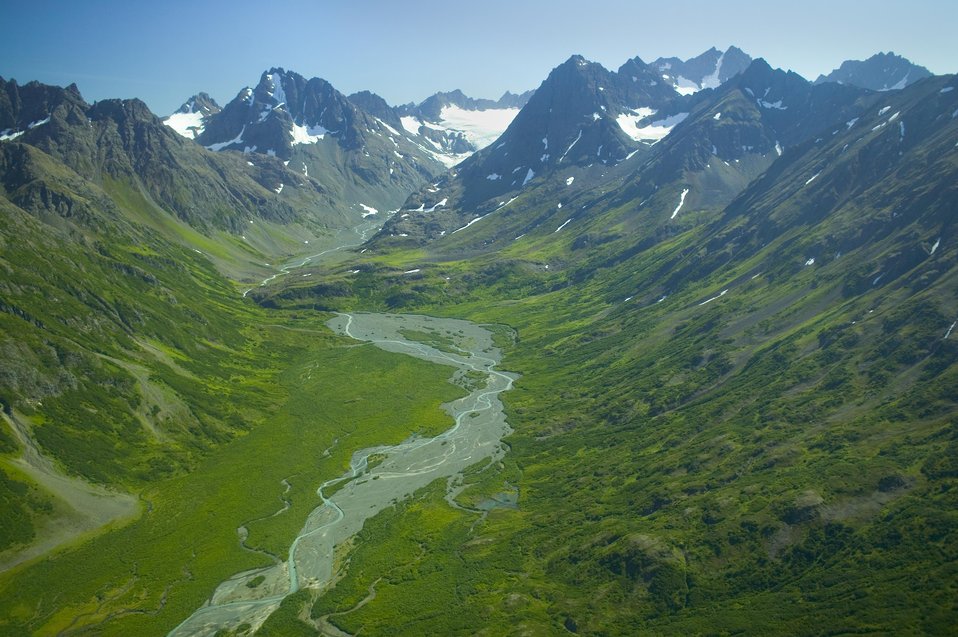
Togiak Nation Wildlife Refuge